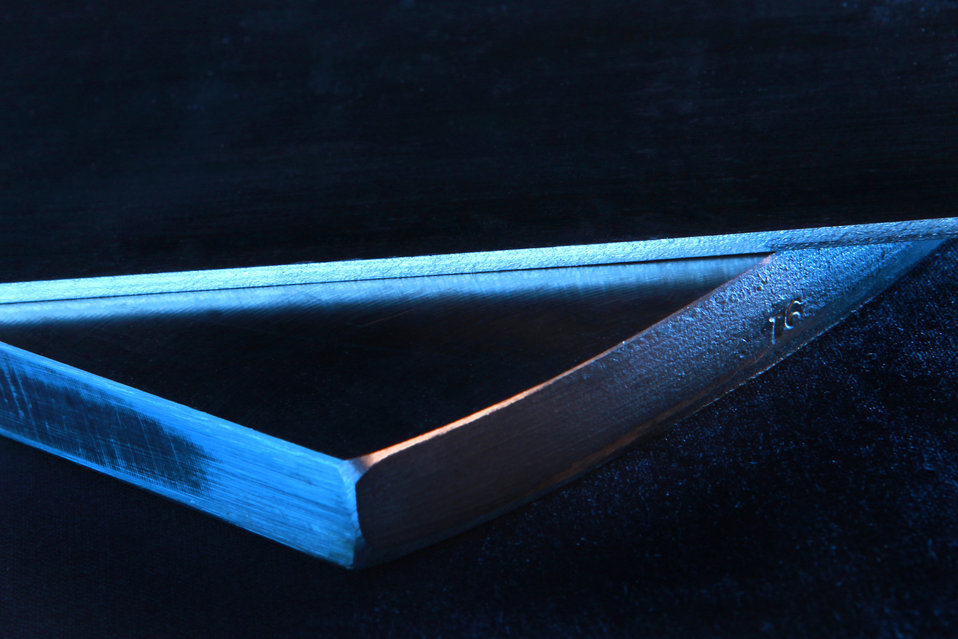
Shown is the alumina-forming austenitic at Oak Ridge National Laboratory.
AFT stainless steels boast an increase upper-temperature oxidation, or corrosion, limit that is 100 to 400 degrees Fahrenheit higher than that of conventional stainless steels. These new alloys deliver this superior oxidation resistance with high-temperature strengths approaching that of far more expensive nickel-based alloys without sacrificing the typical lower cost, formability and weldability of conventional stainless steels. These new alloys have applications ranging from gas turbines and power plans to chemical and petrochemical processing equipment.